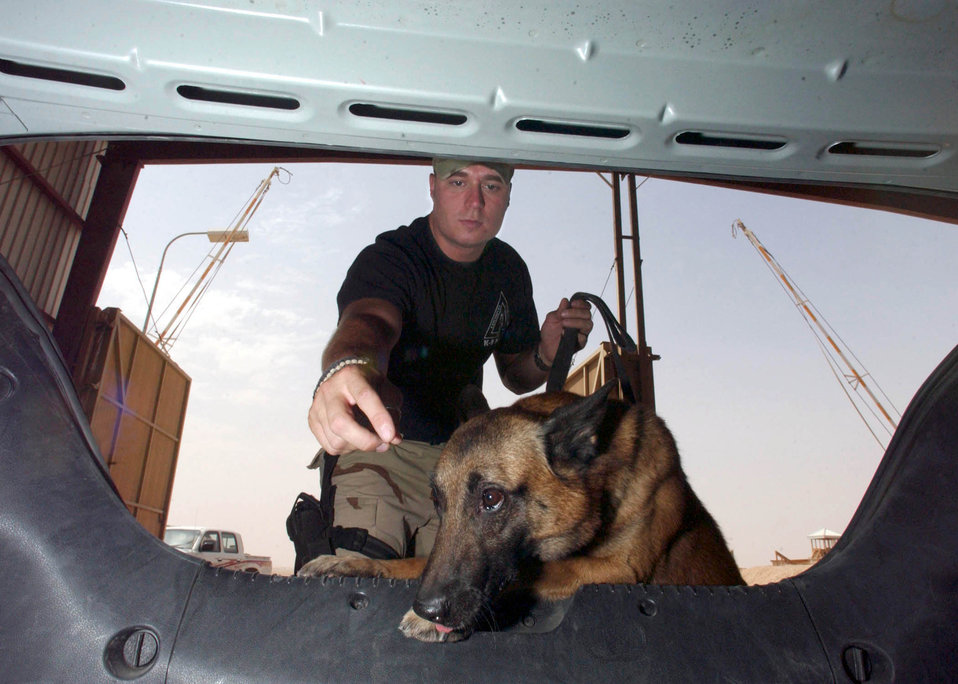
Smithhart and Rex

PRINCE SULTAN AIR BASE, Saudi Arabia -- Staff Sgt. John Smithhart, a K-9 handler with the 363rd Expeditionary Security Forces Squadron, and his military working dog, Rex, inspect a vehicle for explosives. Smithhart and Rex have been deployed from the 52nd SFS at Spangdahlem Air Base, Germany, for more than five months. The 363rd Air Expeditionary Wing's primary mission was to enforce the southern no-fly zone over Iraq. It was also the largest deployed combat wing in theater for Operation Iraqi Freedom.